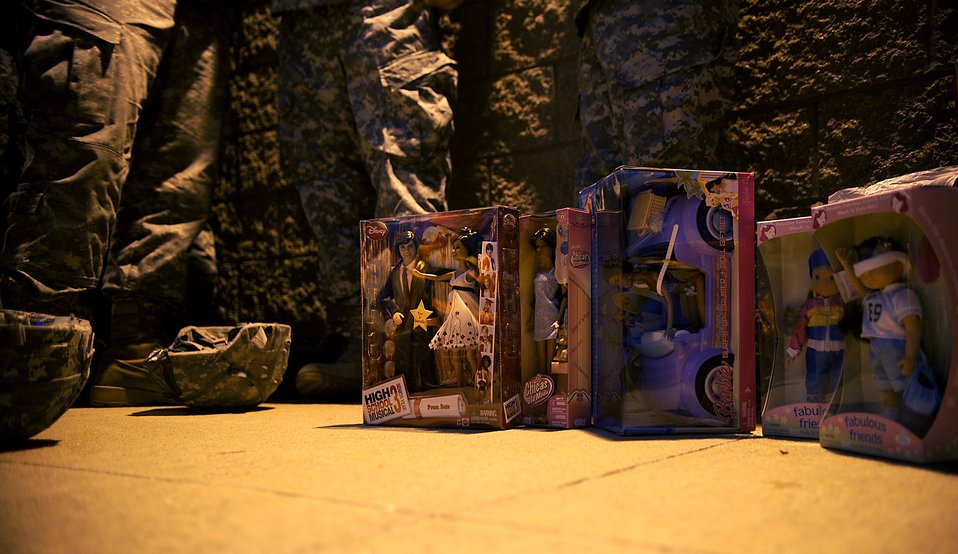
Operation Toy Drop

Toys sit on the sidewalk as Army Soldiers from the 82nd Airborne Division from Fort Bragg, N.C., wait in line to donate the toys and a chance to be picked in a lottery for an opportunity to earn foreign jump wings Dec. 5 at Pope Air Force Base, N.C. Operation Toy Drop is an annual Airborne jump at Fort Bragg in its 11th year hosted by the Army Civil Affairs and Psychological Operations Command (Airborne), and supported by Fort Braggs XVIII Airborne Corps and Pope AFB's 43rd Airlift Wing that gives Soldiers and Airmen the opportunity to help local families in need over the holidays while boosting morale and incorporating valuable training. More than 3,000 Soldiers donated a toy for a lottery ticket and the chance to jump under a foreign jumpmaster earning them their foreign jump wings. This year, German and Irish jumpmasters will be issuing the commands from C-130 Hercules aircraft during the operation.